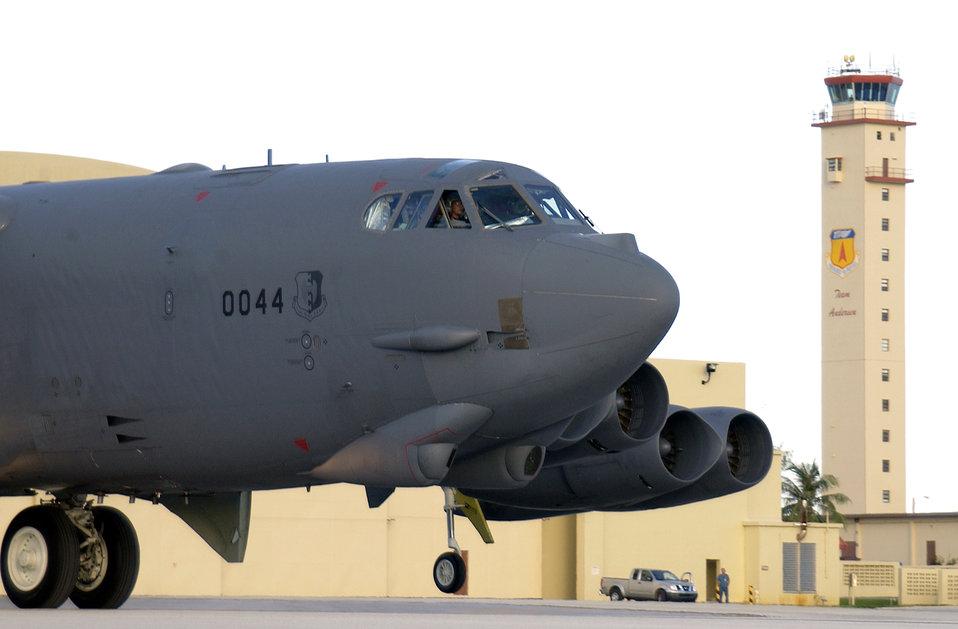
B-52s arrive at Andersen

A 23rd Expeditionary Bomb Squadron B-52 Stratofortress taxis on the airfield at Andersen Air Force Base, Guam, Aug. 30. The B-52, from the 5th Bomb Wing at Minot AFB, N.D., is one of six scheduled to be deployed to Andersen for four months. The aircraft, aircrews, support staff and maintainers will continue the mission of promoting regional security and preserving regional stability, while providing a continuous bomber presence.